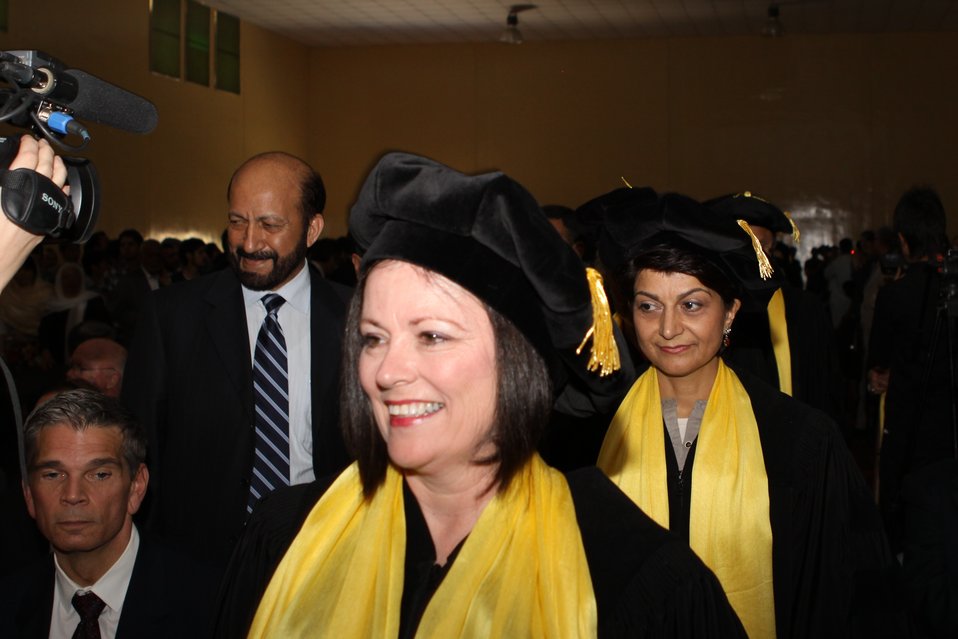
100526 AUAF Graduation 110